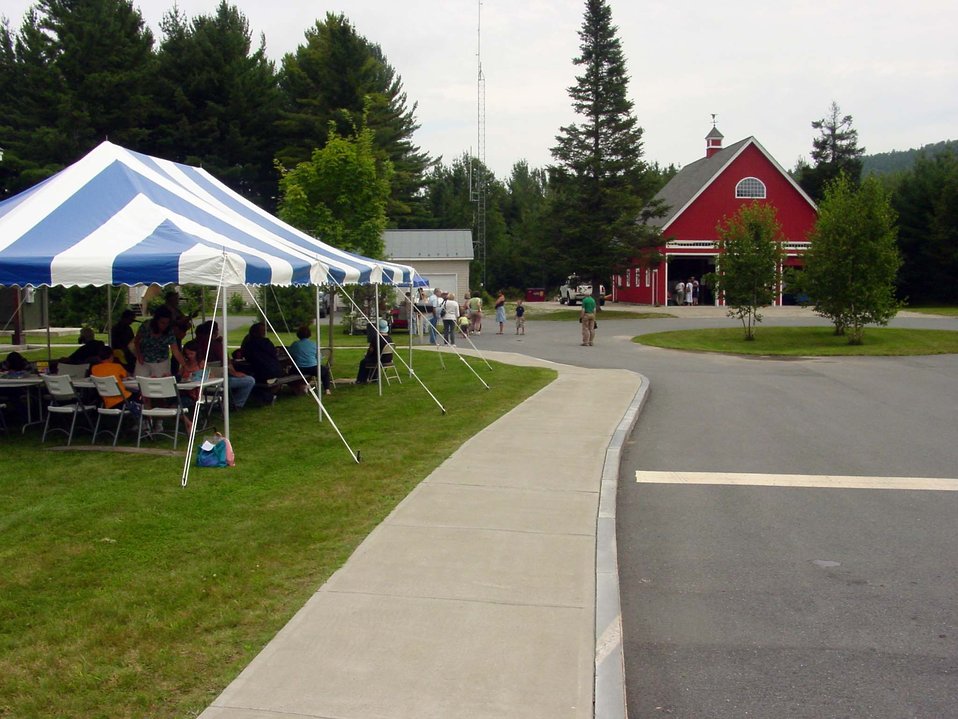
Nulhegan Wildlife Festival

Nulhegan Basin Division, Silvio O. Conte National Wildlife Refuge.